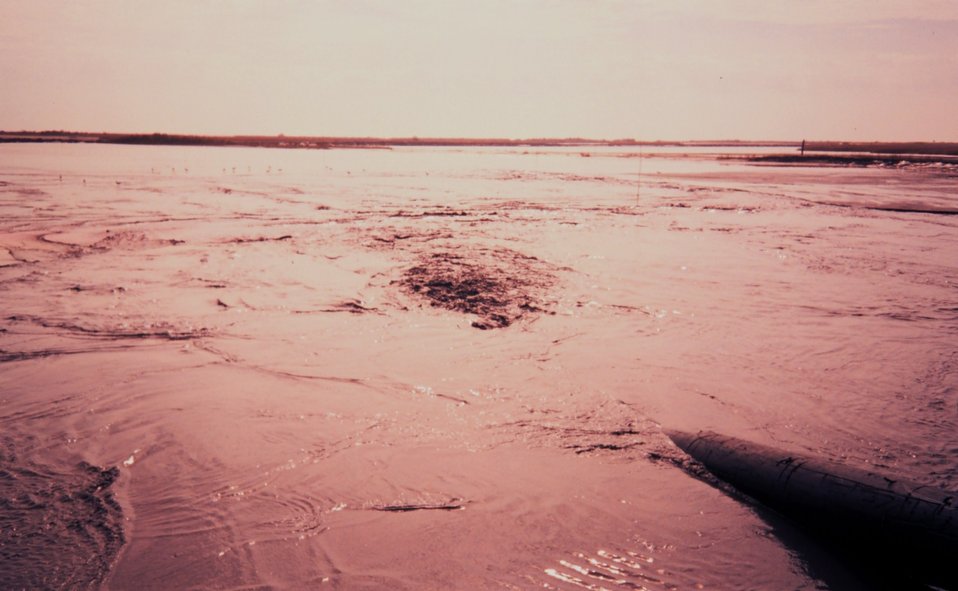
The Greenhill/East Timbalier dredged material coming out of pipe inside of levees -- will dry to form new land.